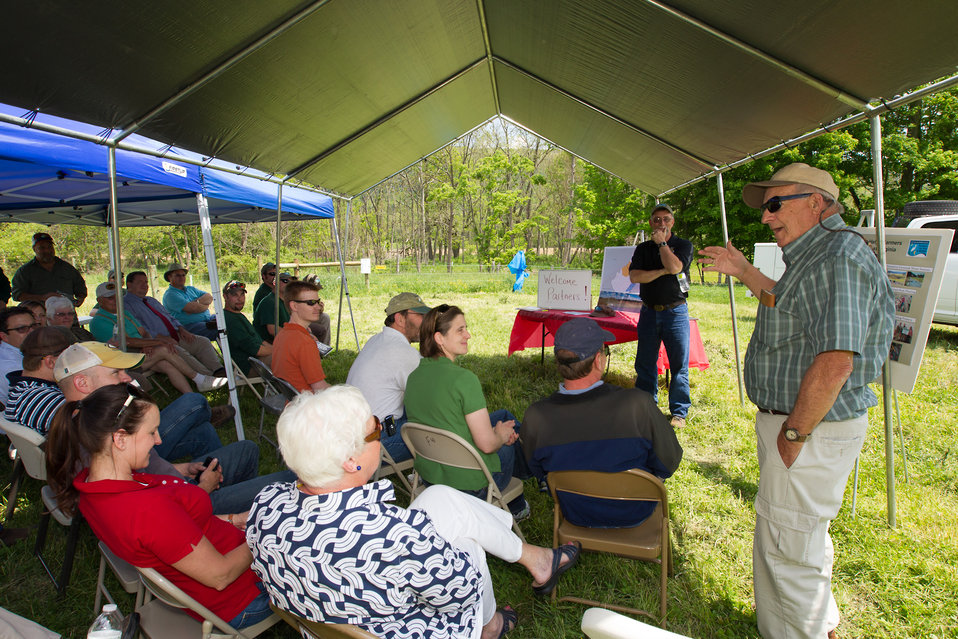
Celebrating 1 Million Feet of Conservation Fence in WV

Partners for Fish and Wildlife Program